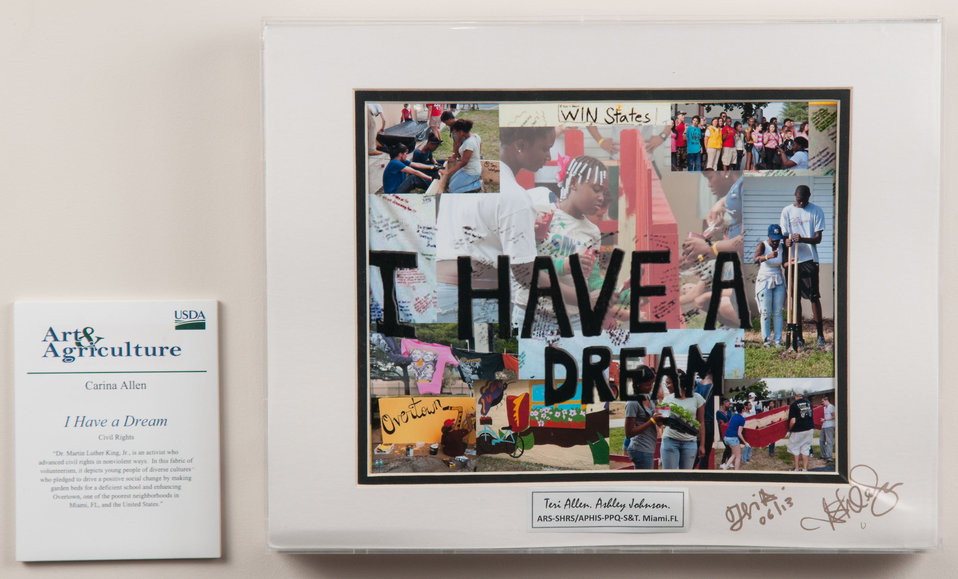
Online Viewer's Choice entries of the 2013 Art & Agriculture, Tuesday, July 9, 2013, in the South Building, Washington, D.C. Themes were expressed by employees from across the department and the contest was open to full-time and part-time USDA employees. Winning artwork will be displayed till the end of the year. U.S. Artistic expression is a creative outlet that is vital for an individual to grow and develop.